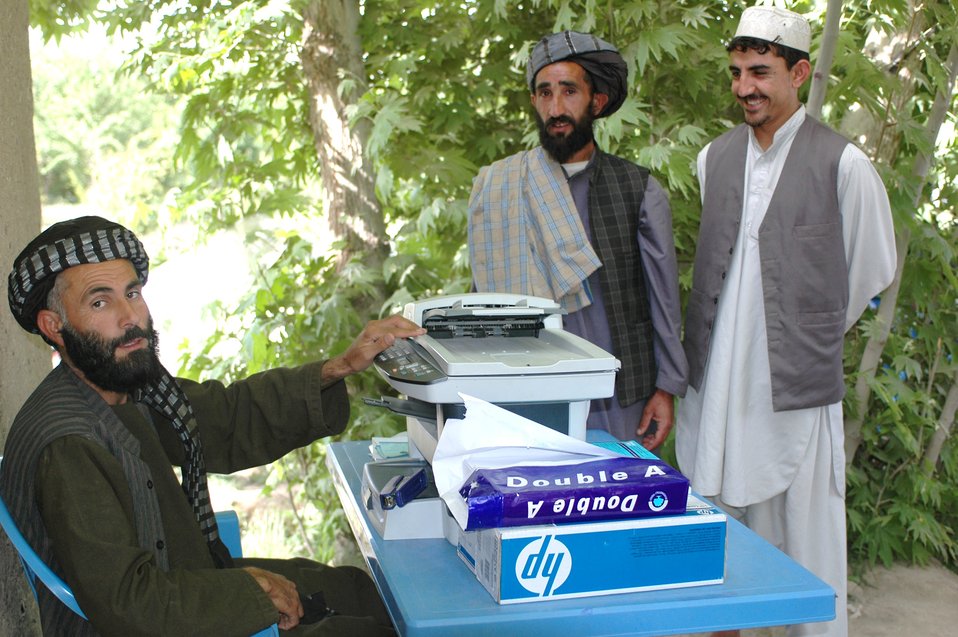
Dr Shah Visits Argandab April 10, 2010